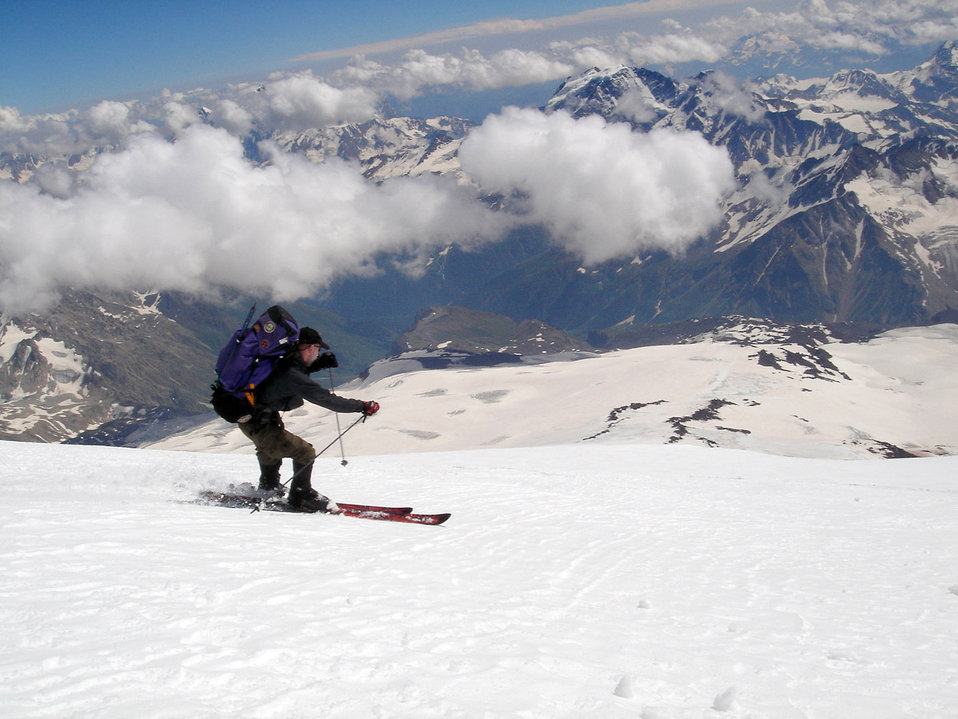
Only sky proves limit for 'mountain men'

MOUNT ELBRUS, Russia -- Capt. Rob Marshall skis the Garabashi Glacier during his descent from the summit of Mount Elbrus. He is assigned to the 67th Special Operations Squadron at Royal Air Force Mildenhall, England.